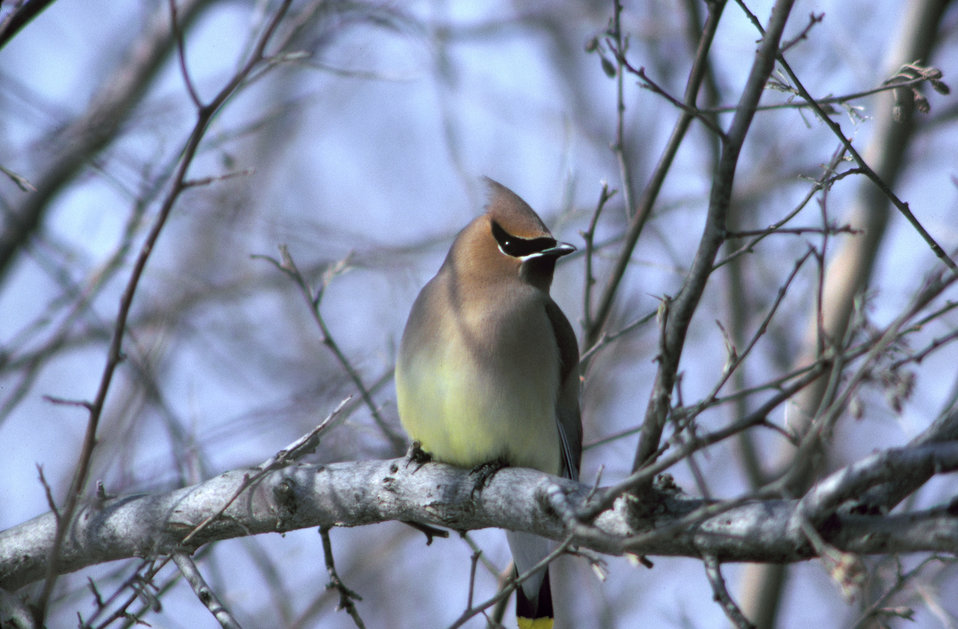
Photo of the Week - Cedar Waxwing

Photo of the week - 12/8/09

A cedar waxwing perched on a branch in the winter.